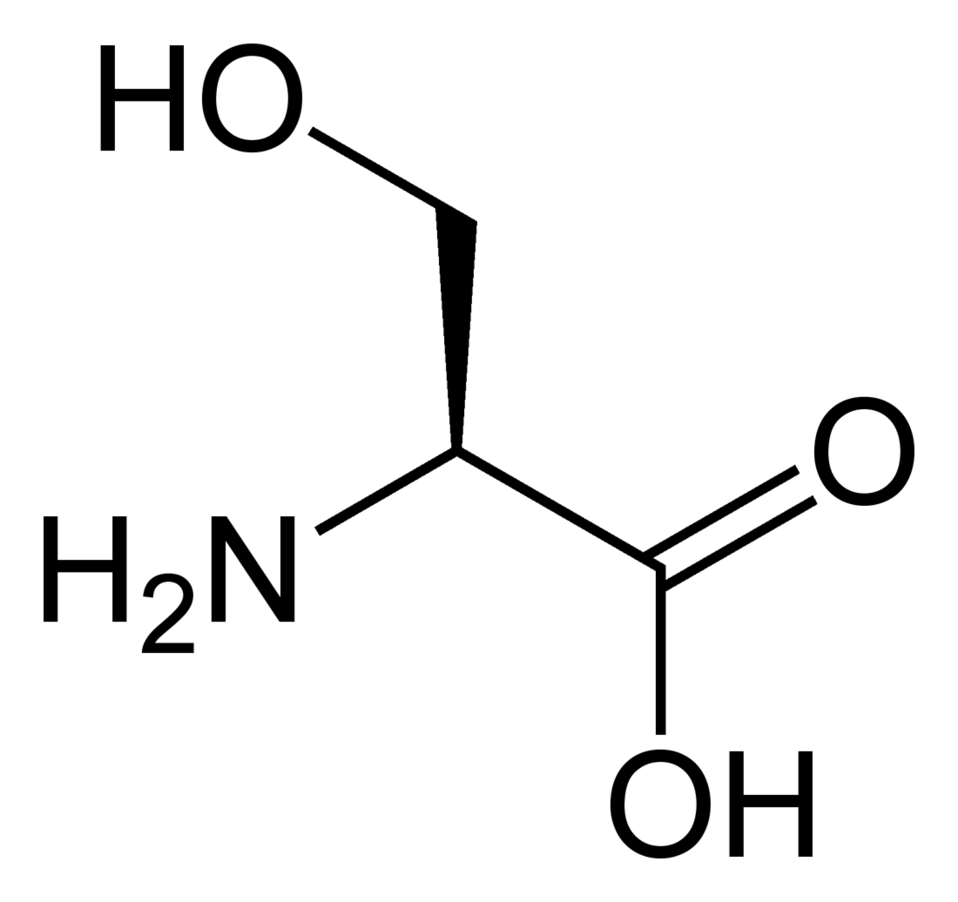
L-serine-2D-skeletal